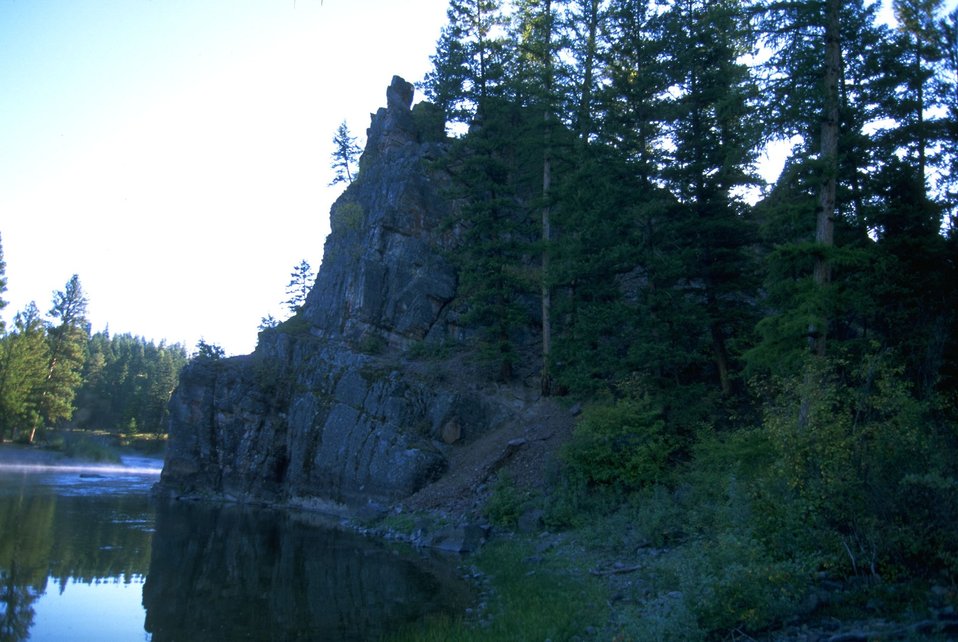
Red Rocks area of Blackfoot River in the early morning